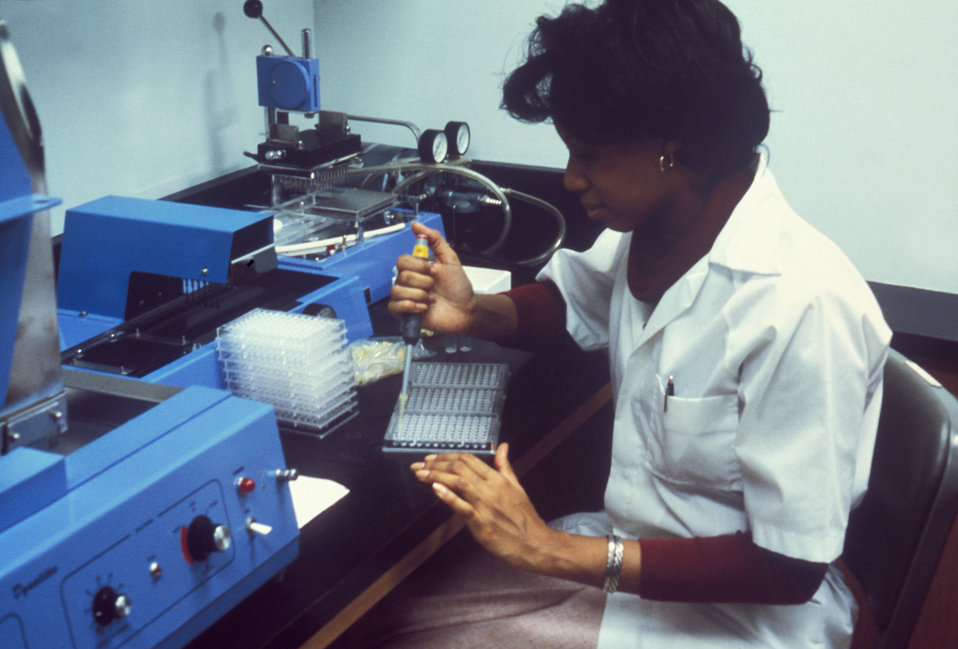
Here a laboratory technician is preparing materials to be used in a study of Legionella pneumophila bacterium.